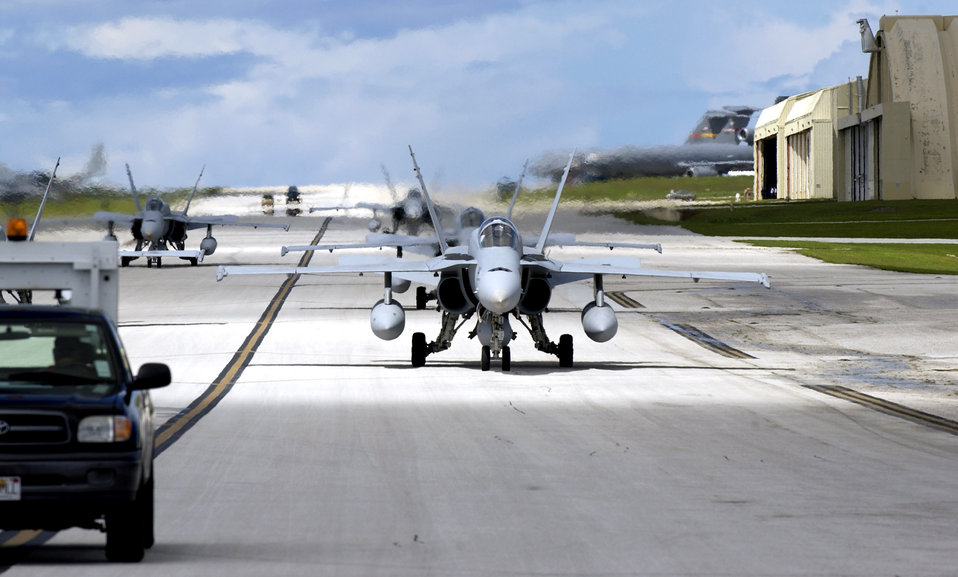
Airpower key to Exercise Valiant Shield

Navy F-18 Hornets from the Naval Air Station's Joint Reserve Base in New Orleans arrive to take part in the Valiant Shield exercise Aug. 6 at Andersen Air Force Base, Guam. During the exercise, Air Force aircraft and Airmen from stateside bases and Kadena Air Base, Japan, will comprise part of an expeditionary air wing based at Andersen AFB. Andersen AFB will also be the beddown location for approximately 64 Air Force and 29 Navy aircraft, plus transient aircraft, during Valiant Shield.